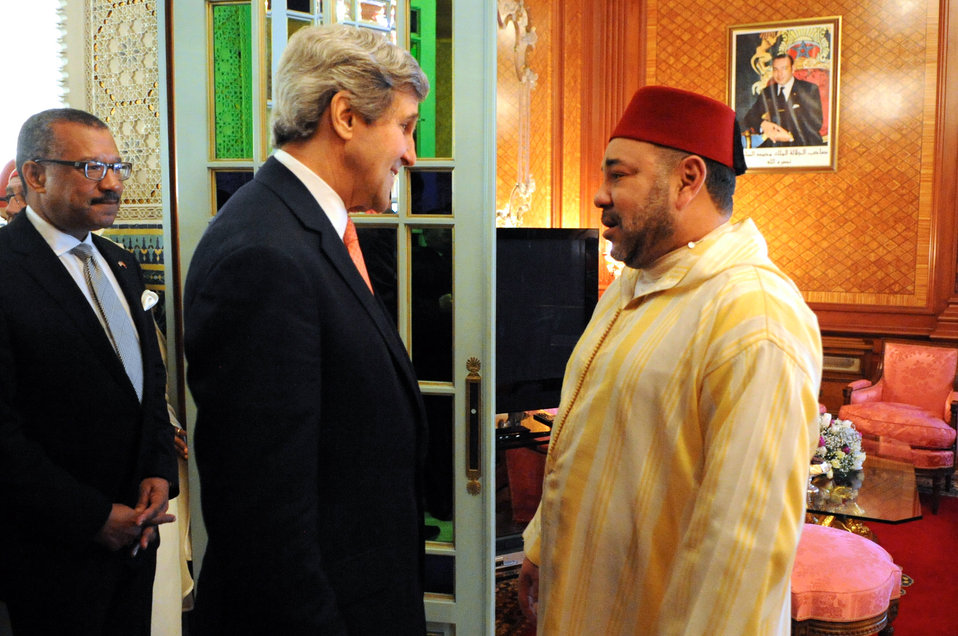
Secretary Kerry Meets With King Muhammed VI of Morocco in Casablanca

U.S. Secretary of State John Kerry, flanked by U.S. Ambassador to Morocco Dwight Bush, is greeted by King Muhammed VI of Morocco at the start of a bilateral meeting in Casablanca on April 4, 2014.